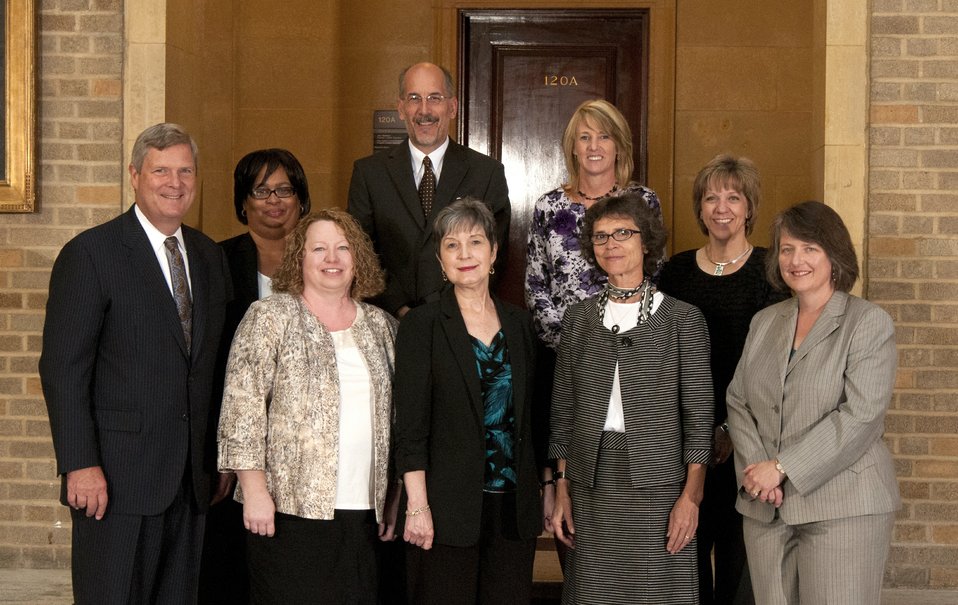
Agriculture Secretary Tom Vilsack and Deputy Agriculture Secretary Kathleen Merrigan with Honor Award Group Expanding Small Business Exports Team, Foreign Agricultural Service (FAS) on the patio of the U.S. Department of Agriculture in Washington, D.C. on Wednesday, Sept. 12, 2012. The Expanding Small Business Exports Team provided superlative outreach to U.S. small businesses in support of agricultural export expansion, a top priority of the President’s National Export Initiative.